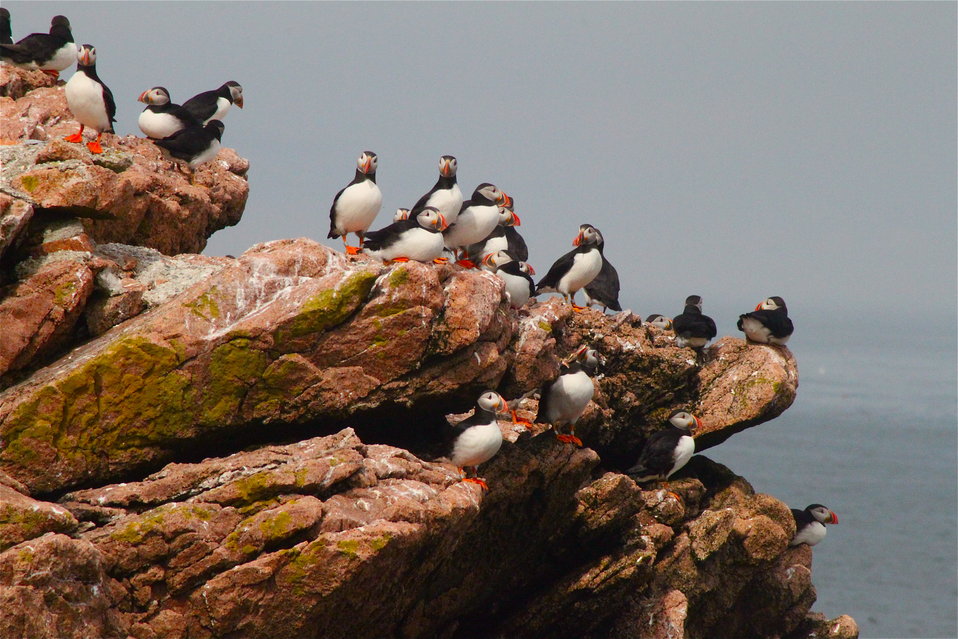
Puffins On Cliff